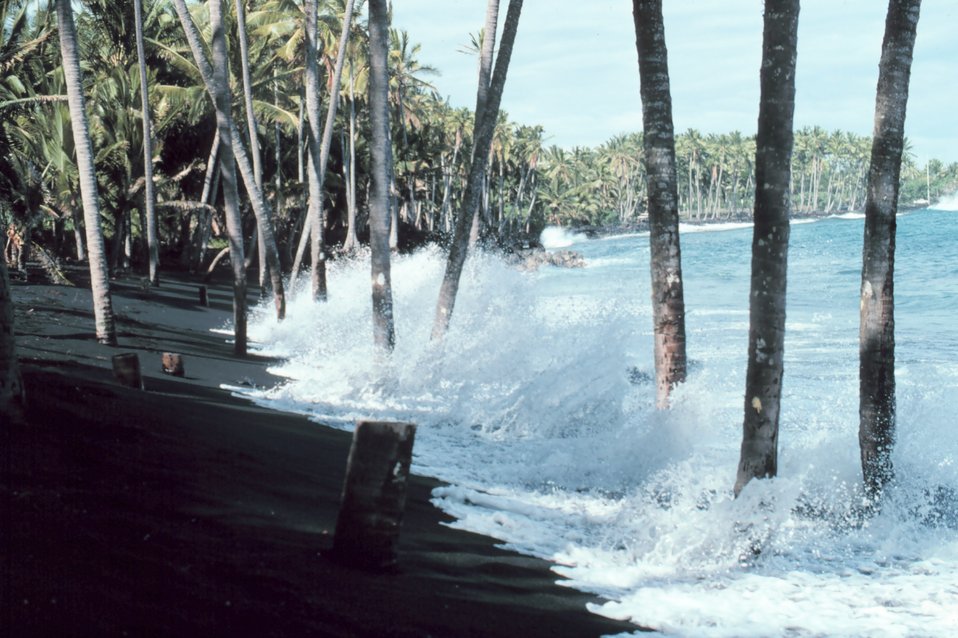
A black lava sand beach - since destroyed by lava flows.